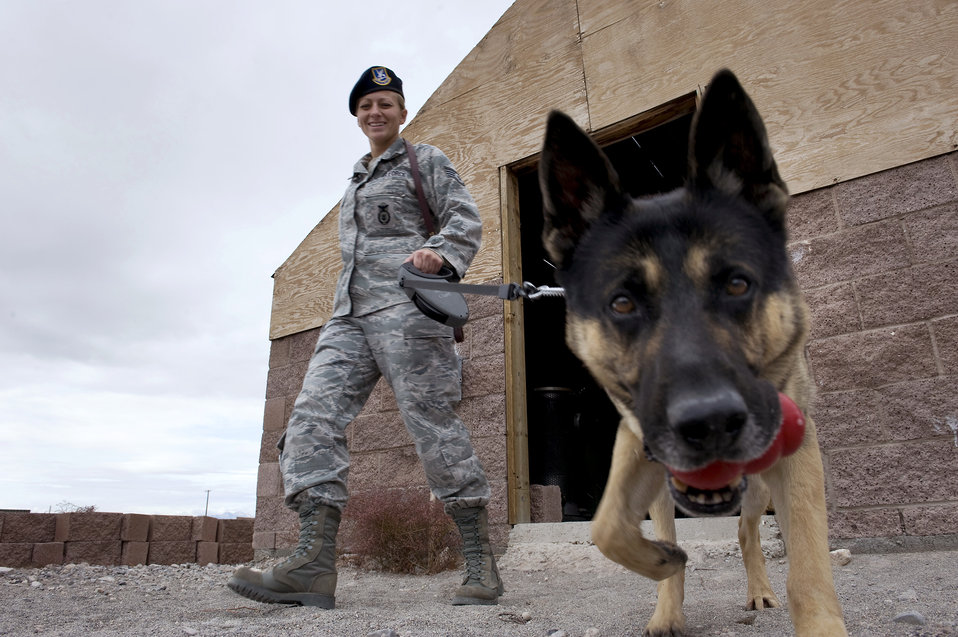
Nellis AFB officials host joint training exercise for local canine units

Staff Sgt. Bobbie Ohm walks with Nero to search for explosives Dec. 16, 2010, at Nellis Air Force Base, Nev., during a joint explosive detection training exercise. Military working dog handlers from the 99th Security Forces Squadron worked with 25 canine teams from the Las Vegas area. Sergeant Ohm is a 99th Security Forces Squadron military working dog handler, and Nero is an Air Force military working dog.